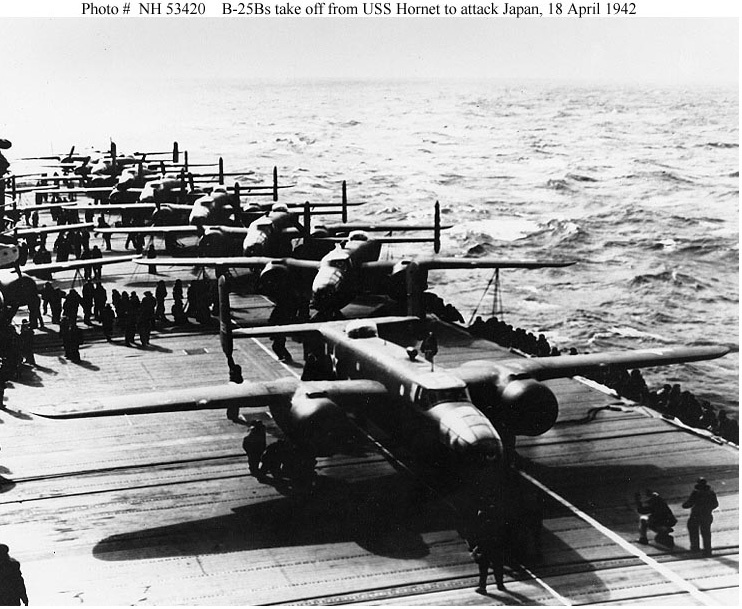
Doolittle Raid

A U.S. Army Air Forces B-25B bomber lines up for takeoff from USS Hornet (CV-8), on the morning of April 18, 1942. Note white lines painted on the flight deck, below the plane's nose and wheels, to guide the pilot during the takeoff run. This is the third or fourth plane to be launched.